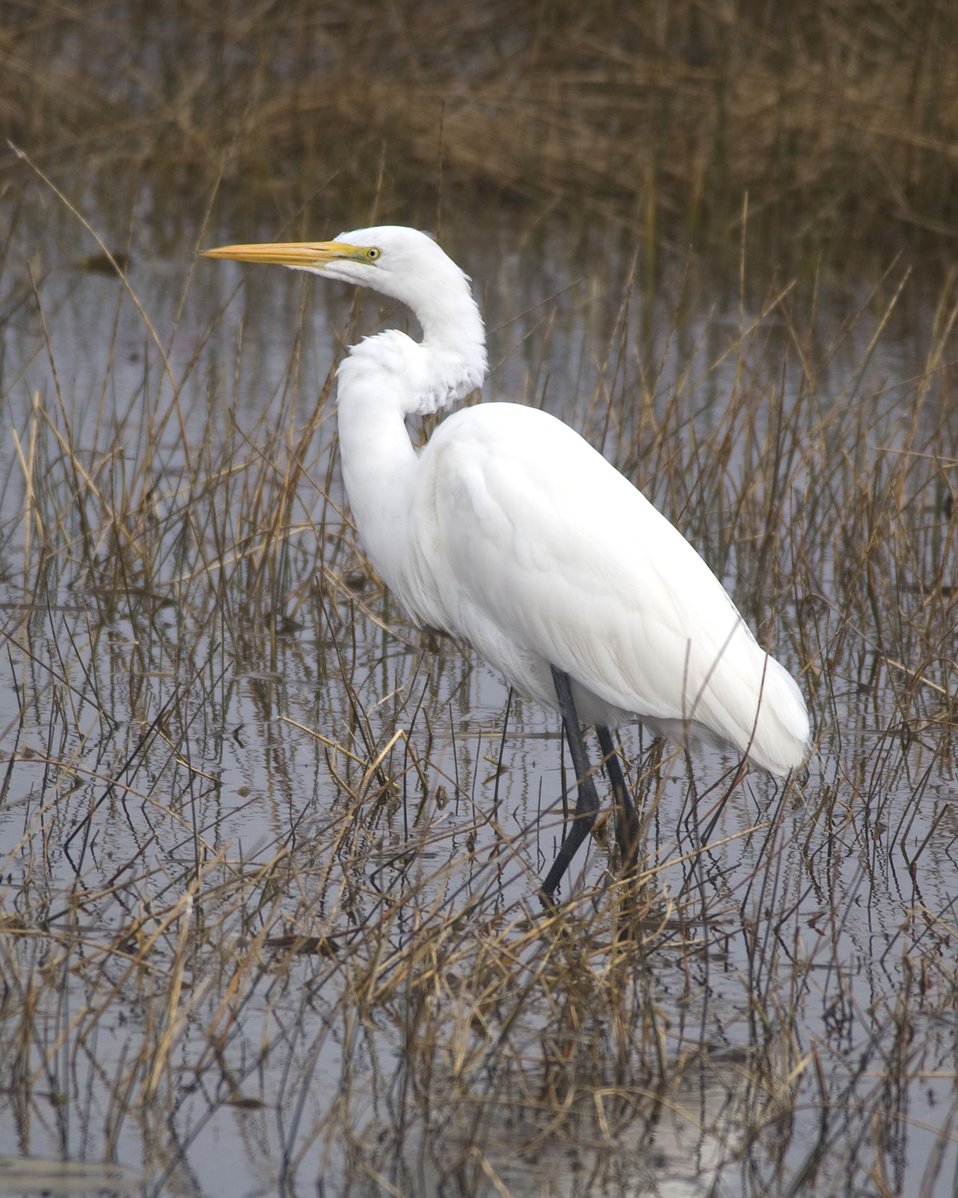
St. Marks Refuge

Great egret at St. Marks National Wildlife Refuge, FL.